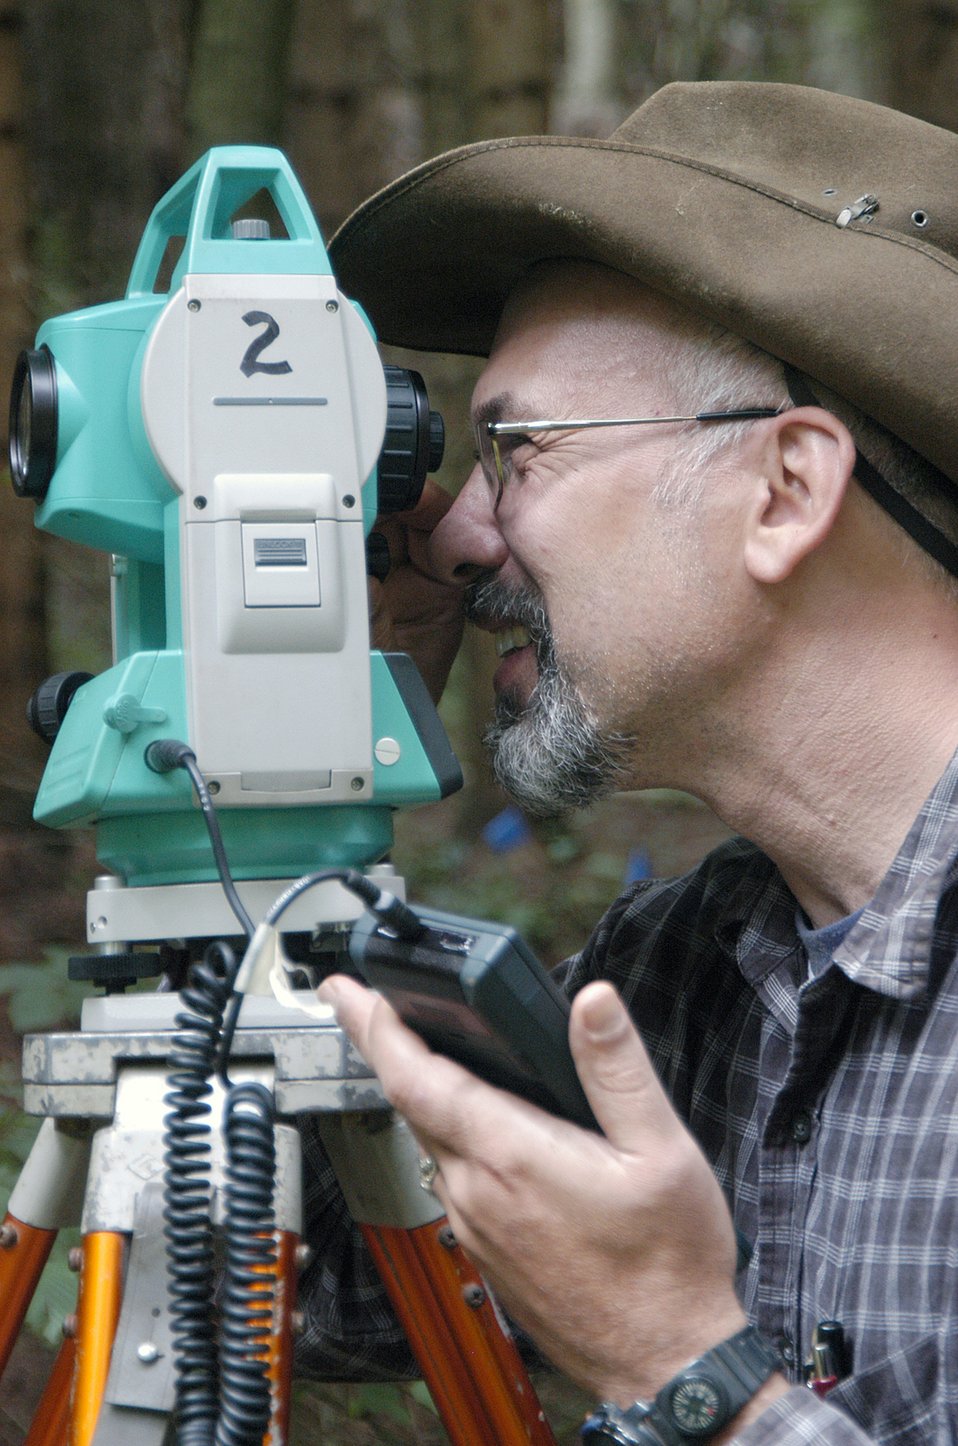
JPAC team returns from Austria

Dr. Jay Silverstein surveys the site his team will be excavating in Vostenhof, Austria, on Aug. 14. Dr. Silverstein is a forensic anthropologist for the Joint POW/MIA Accounting Command at Hickam Air Force Base, Hawaii. An 18-member JPAC team, including an explosive ordnance disposal technician and field medic, returned Oct. 1 after 45 days in Austria attempting to recover the remains of 1st Lt. Stanley Dwyer and gunner Sgt. John Boros who were lost in the crash May 10, 1944. The mission of JPAC is to achieve the fullest possible accounting of all Americans missing as a result of the nation's past conflicts.